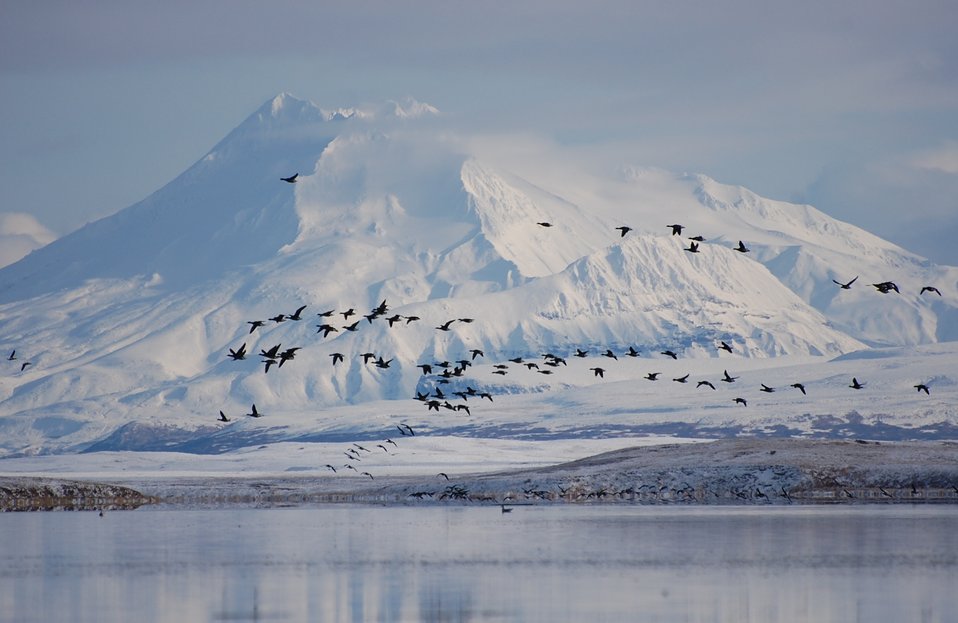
Brant & Mount Dutton, Izembek Lagoon, Izembek National Wildlife Refuge
Photo by Kristine Sowl, USFWS, Public domain